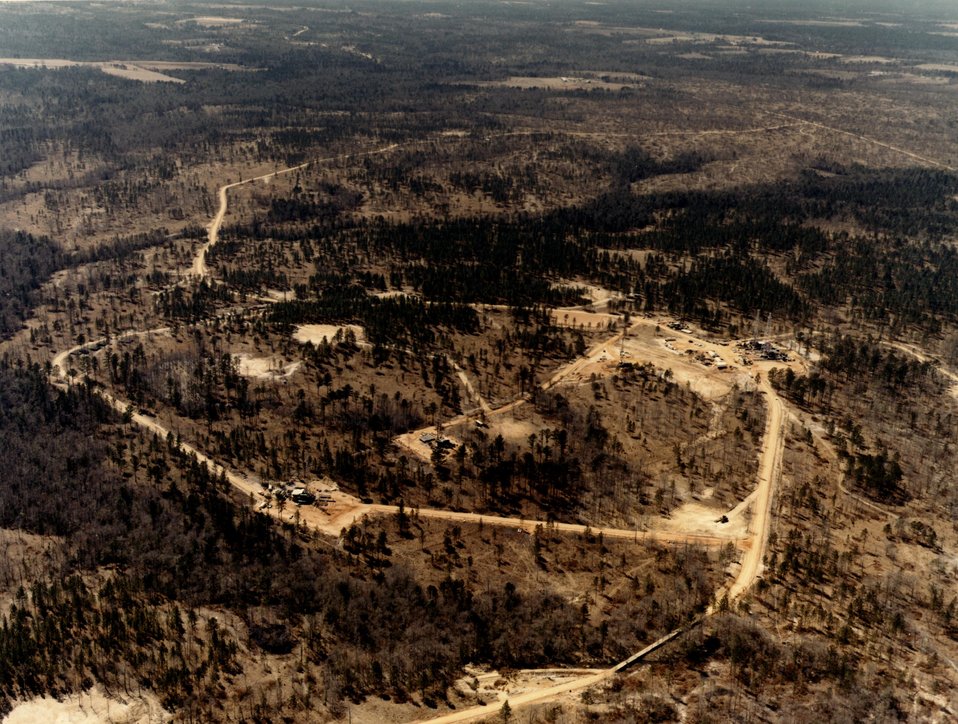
Dribble Site Aerial.